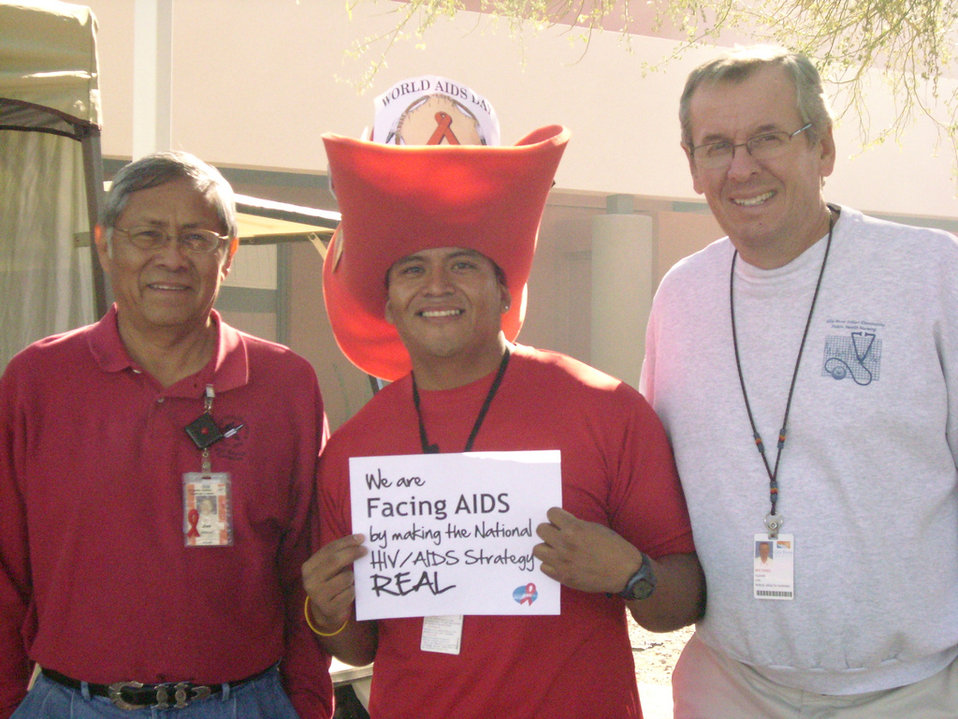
We are Facing AIDS through NHAS-07